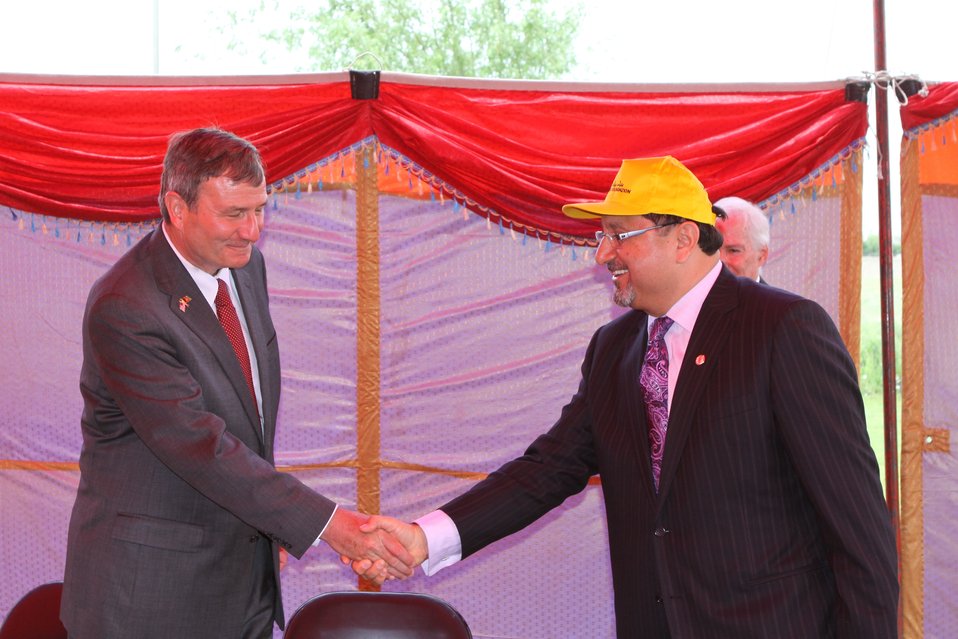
100526 AUAF Graduation 386